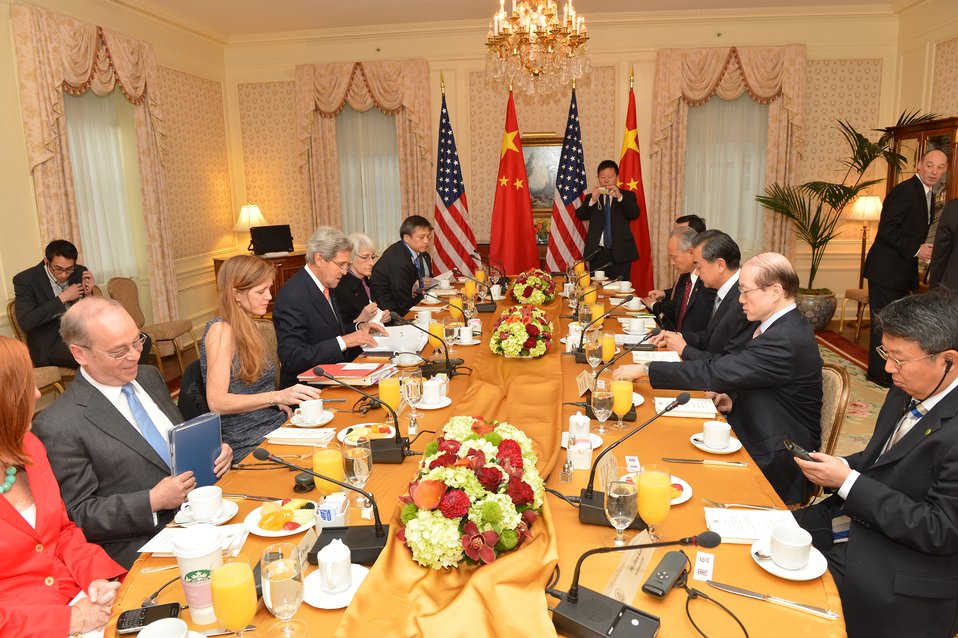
Secretary Kerry Meets With Chinese Foreign Minister Wang Yi

U.S. Secretary of State John Kerry meets with Chinese Foreign Minister Wang Yi in New York City on September 26, 2013. You can view a read out of Secretary Kerry's meeting with Chinese Foreign Minister Wang Yi here: go.usa.gov/DfAh.